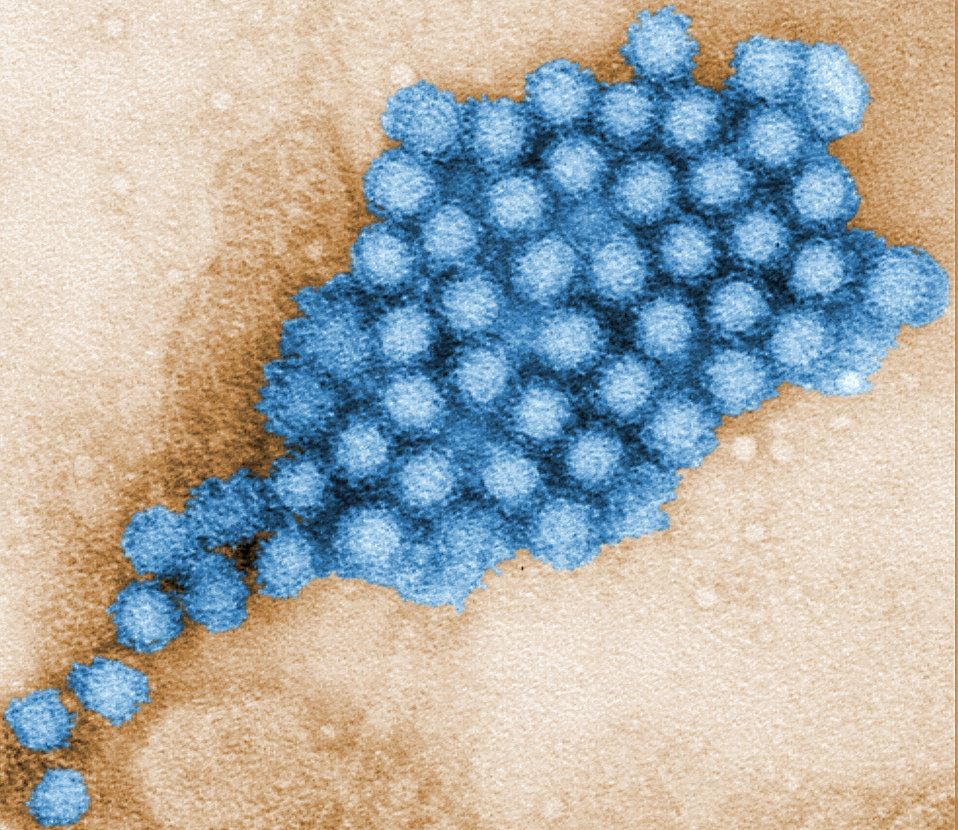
This transmission electron micrograph (TEM) revealed some of the ultrastructural morphology displayed by norovirus virions, or virus particles.